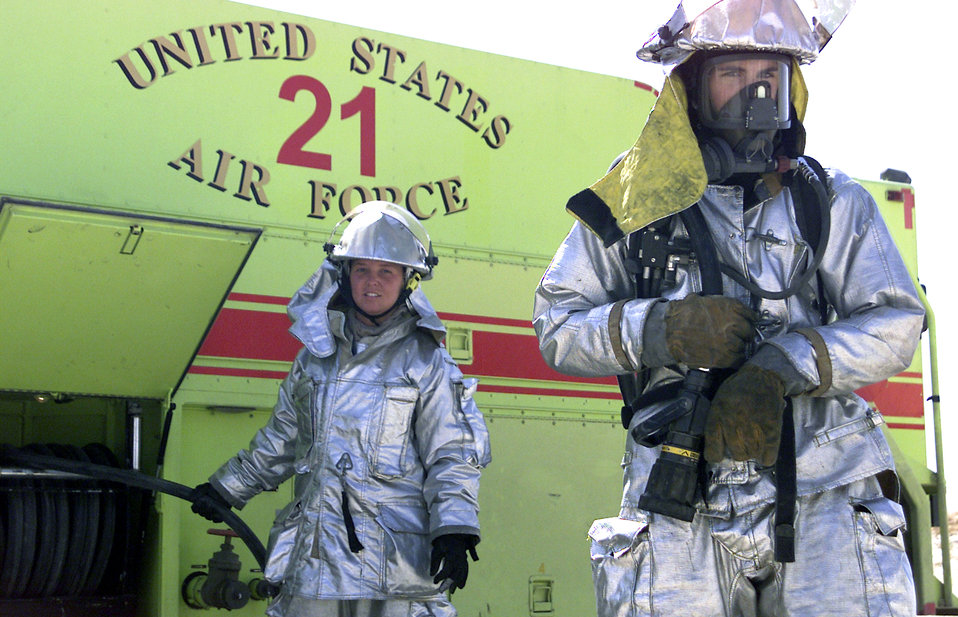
Trailer fire

SOUTHWEST ASIA -- Airmen 1st Class Danielle Morris (left) and Paul Dean drag a fire hose from a base firetruck after extinguishing a trailer fire at a forward-deployed location. Both Airmen are assigned to the 386th Expeditionary Civil Engineer Squadron's fire department. Airman Morris is deployed from the 28th Civil Engineer Squadron at Ellsworth Air Force Base, S.D., and Airman Dean is deployed from the 16th CES at Hurlburt Field, Fla.